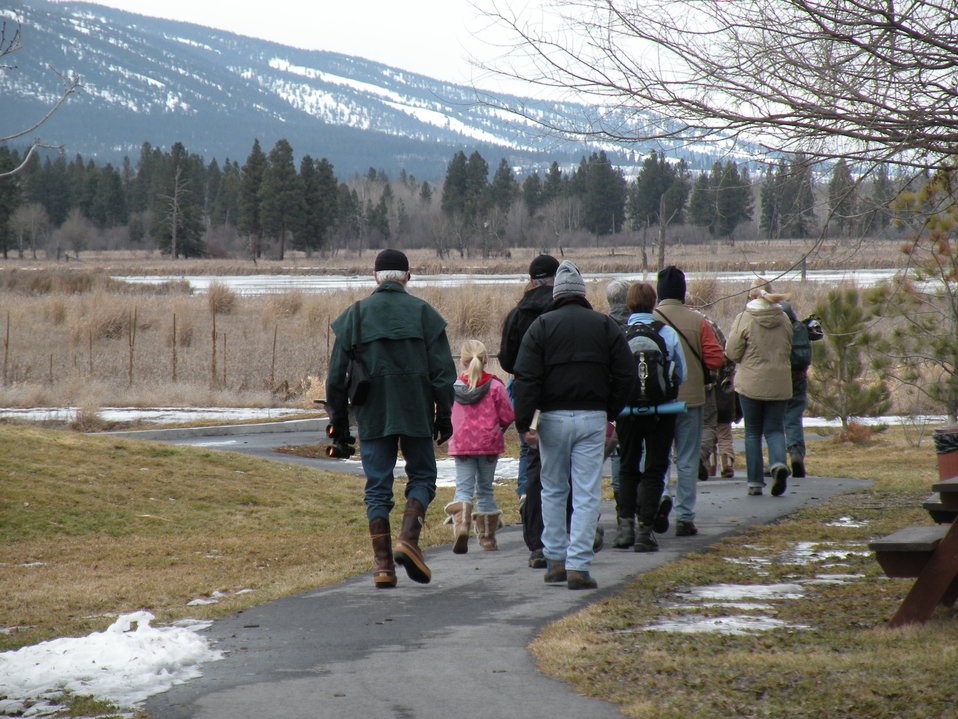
Mid-Winter Thaw at Lee Metcalf NWR

Five Valleys Audubon Society (Missoula, MT) picked a perfect day (spring in the air) for a beginning bird walk along the Kenai Nature Trail on the Refuge. Displaying common goldeneye were a highlight.